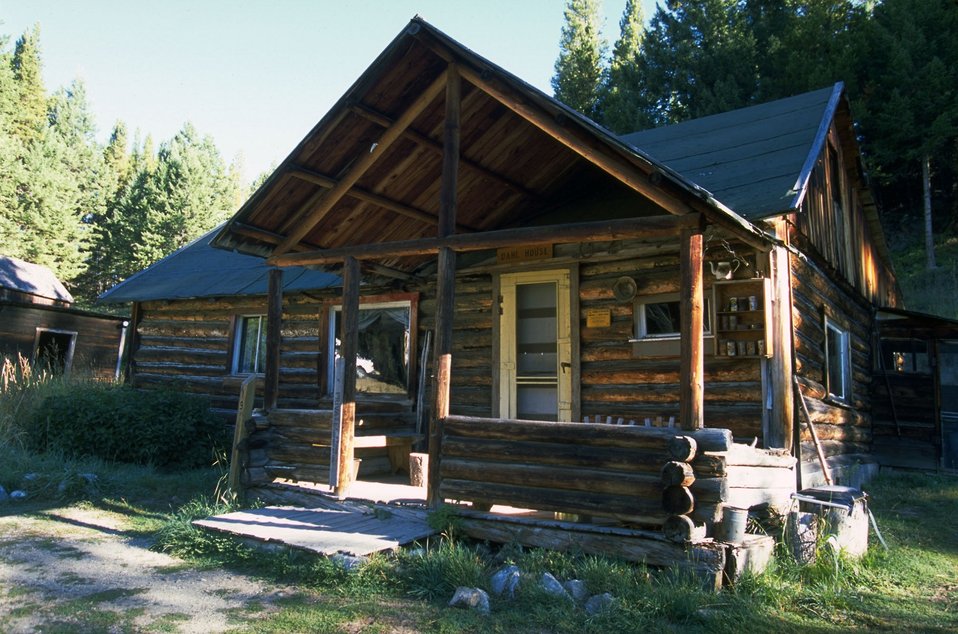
Dahl Cabin in Garnet Ghost Town